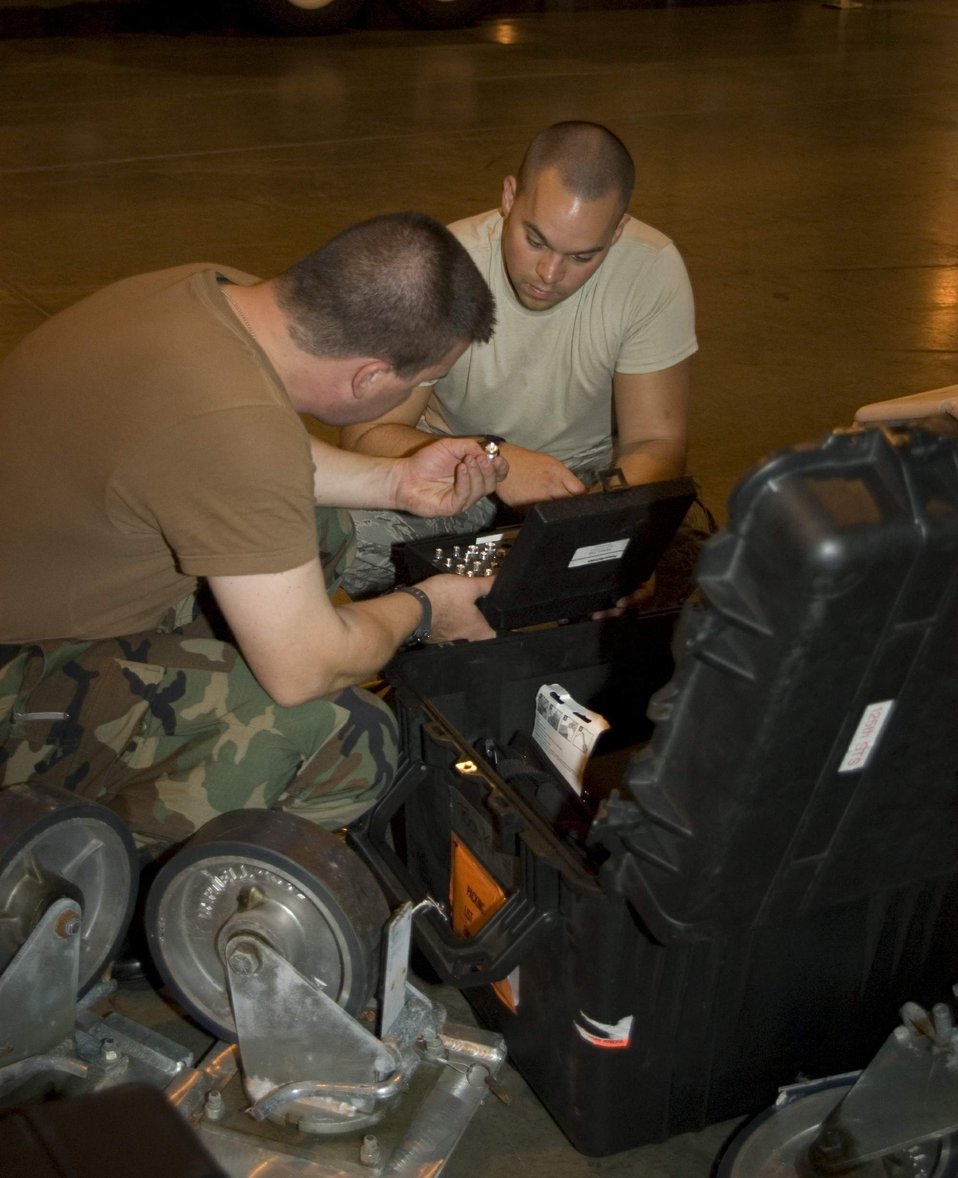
Special tactics unit arrives in Houston to aid Ike relief

Staff Sgt. Warren Ruedy and Tech. Sgt. Zach Shaffer inspect cable connections Sept. 12 at the Reliant Center in Houston. Sergeants Ruedy and Shaffer are part of the Oregon Air National Guard's 125th Special Tactics Squadron in Houston as part of the Hurricane Ike relief efforts. Sergeant Ruedy is a medical technician and Sergeant Shaffer is a radio maintenance technician.